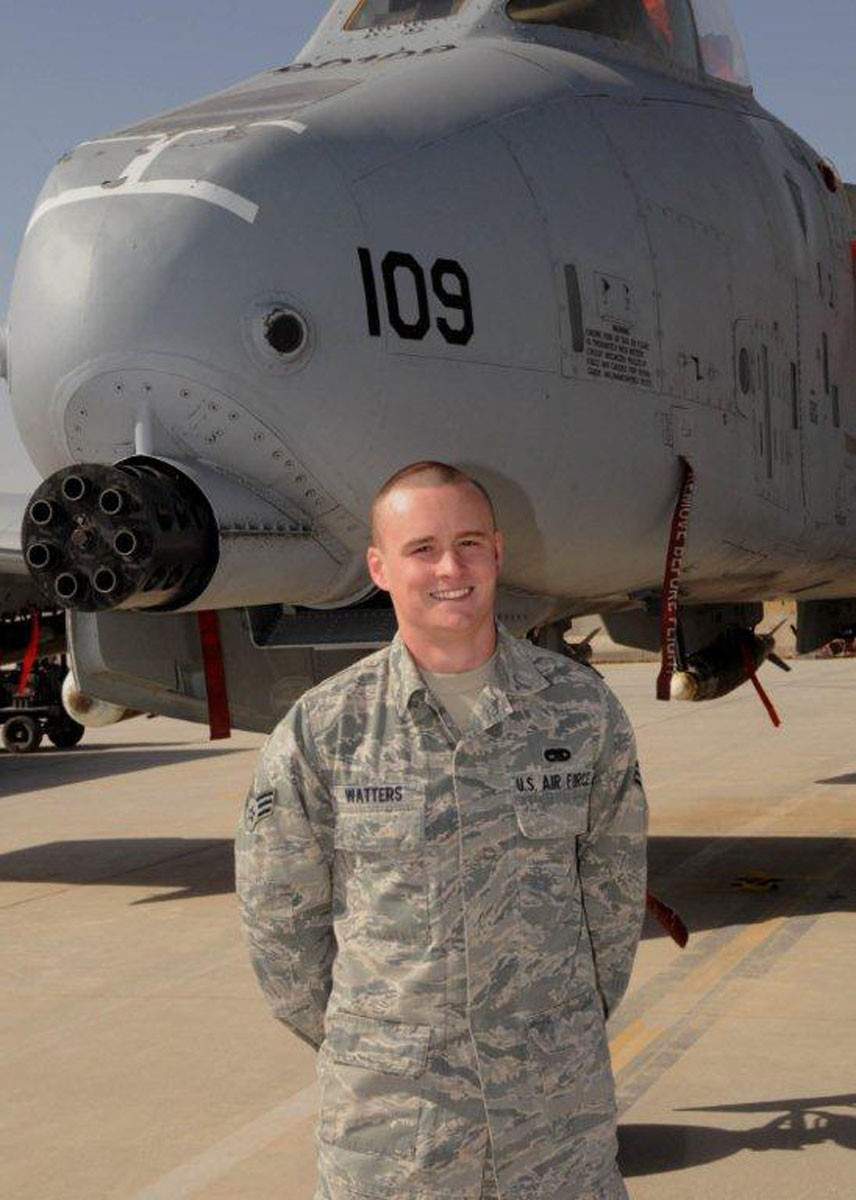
Maintainer plys trade in Afghanistan

Senior Airman Shawn Watters is an aircraft electrical and environmental systems technician from the 442nd Aircraft Maintenance Squadron out of Whiteman Air Force Base, Mo. Watters is currently serving in Kandahar, Afghanistan, and is assigned to phase dock where he and his team conduct more than 500 inspection hours on the A-10 Thunderbolt II.